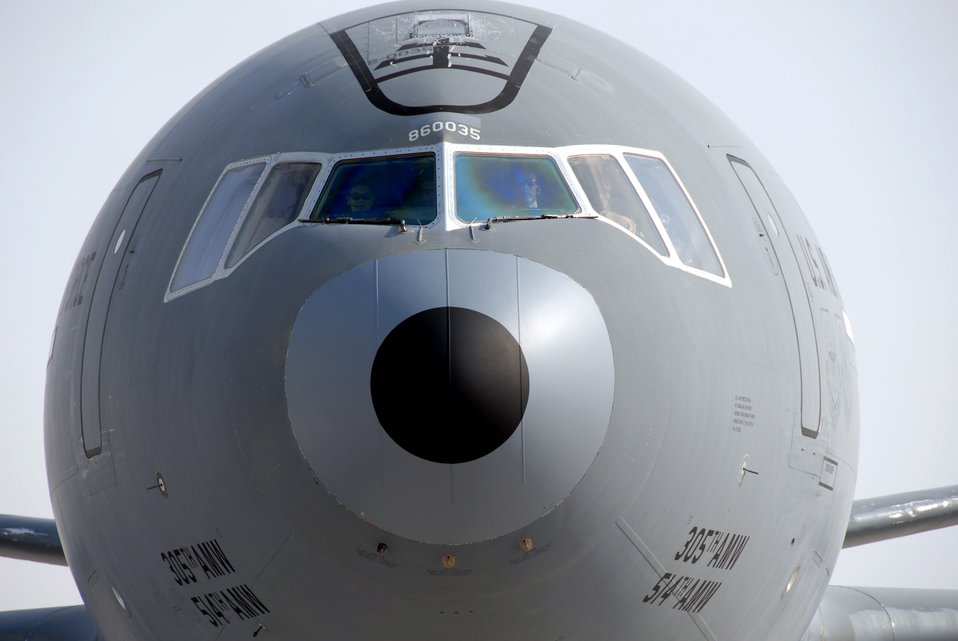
Keeping the fuel flowing

Two pilots in a KC-10 Extender from the 380th Air Expeditionary Wing pull into a parking spot Dec. 19 after returning from a mission over Iraq in support of Operation Iraqi Freedom. The air refueler is part of the largest air-refueling unit in Southwest Asia consisting of KC-10s and KC-135 Stratotankers. The KC-10 can carry about 56,000 gallons of gas, enough to fill a sport-utility vehicle 1,400 times.